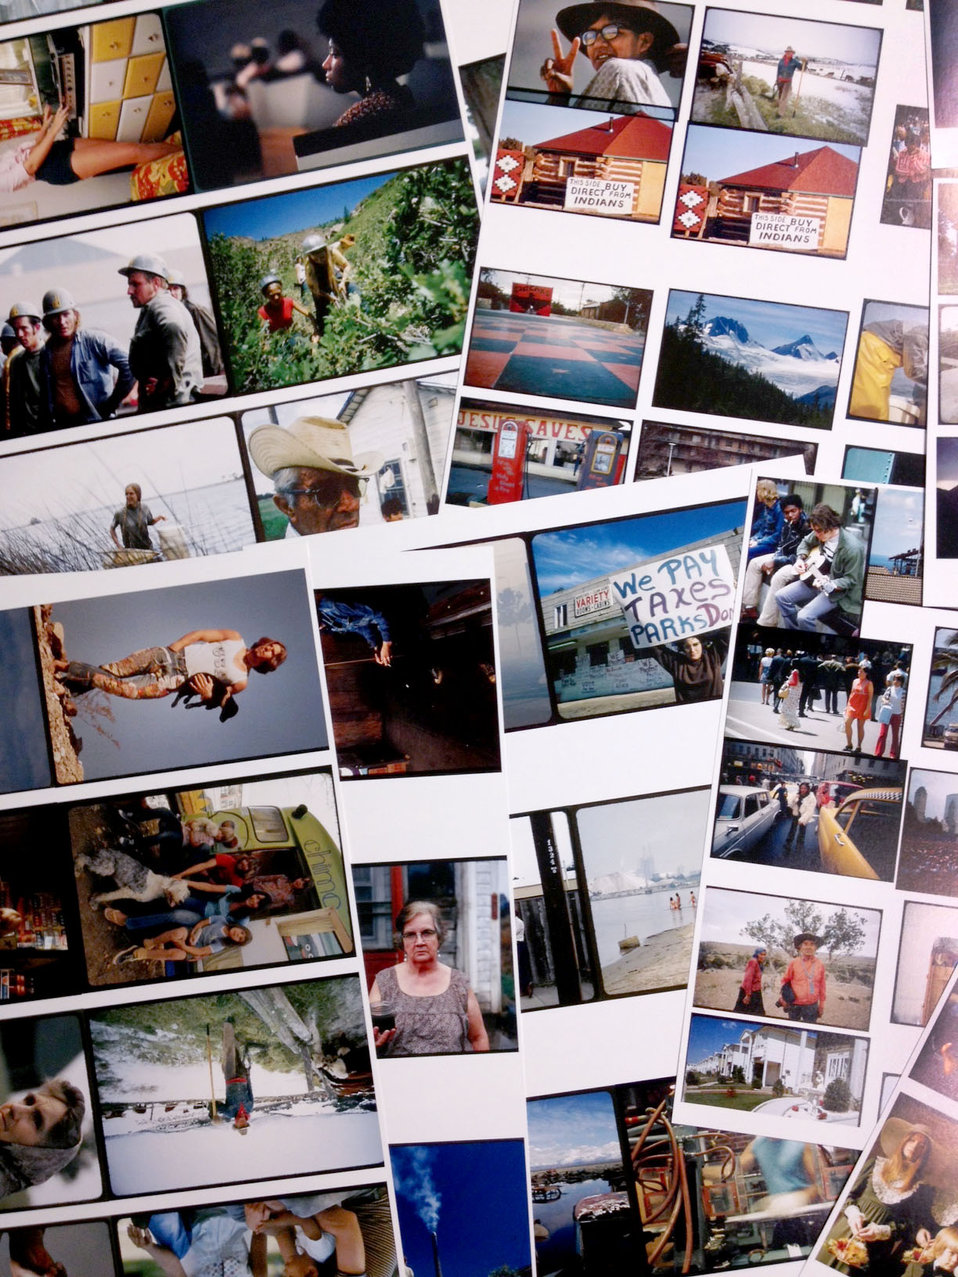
Documerica Test Prints

Test prints of Documerica photos for the 'Searching for the Seventies' exhibit. These test prints helped us get to the beautiful final images that will go on exhibit in March.